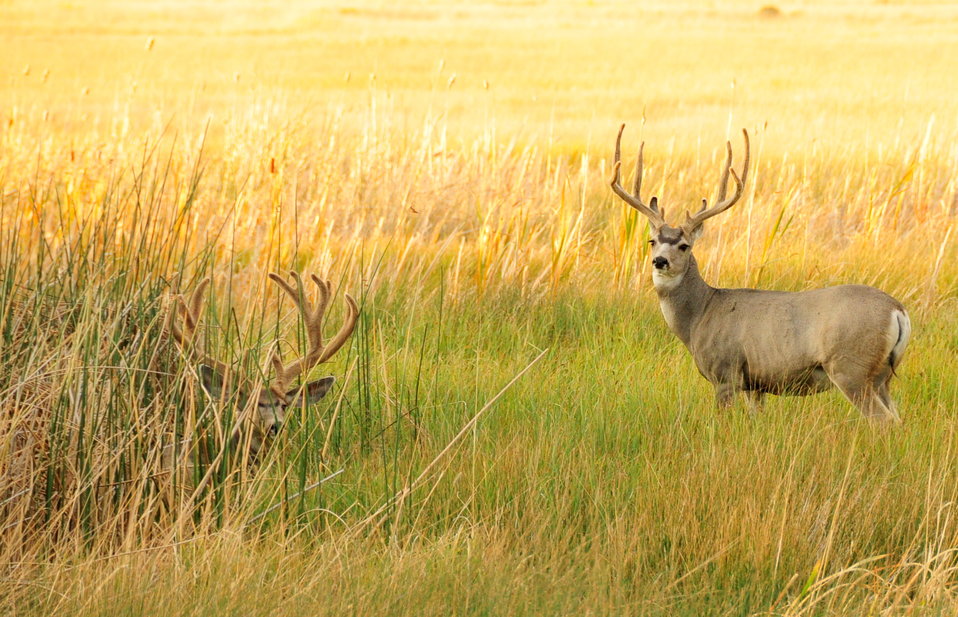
Mule deer bucks in velvet Seedskadee National Wildlife Refuge 03

Two mature mule deer bucks in late summer on Seedskadee NWR.